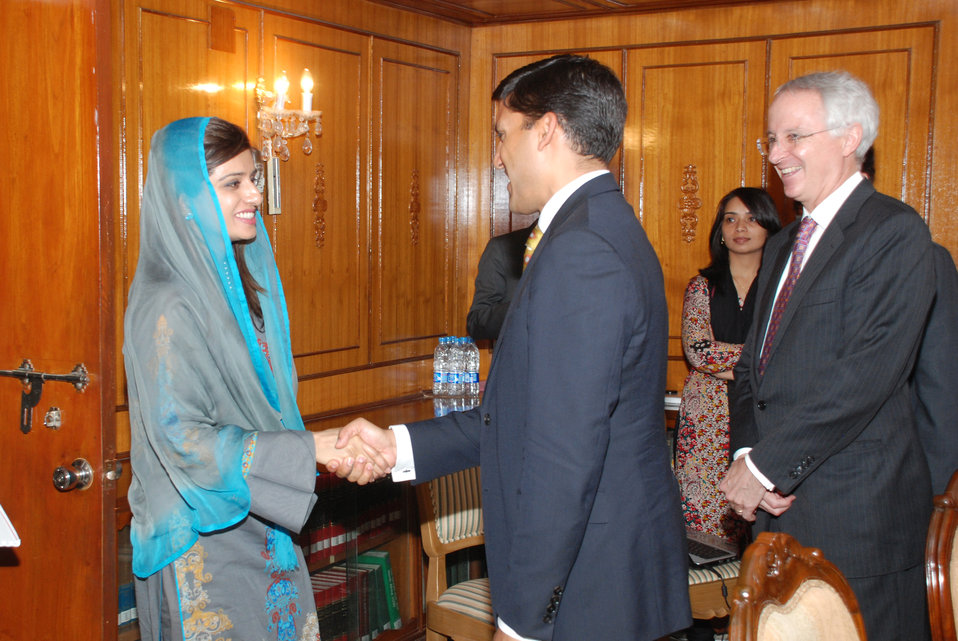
US officials Meeting with Minister of Foreign Affairs, Assistance to Pakistan Remains Strong at Islamabad on April 14, 2012